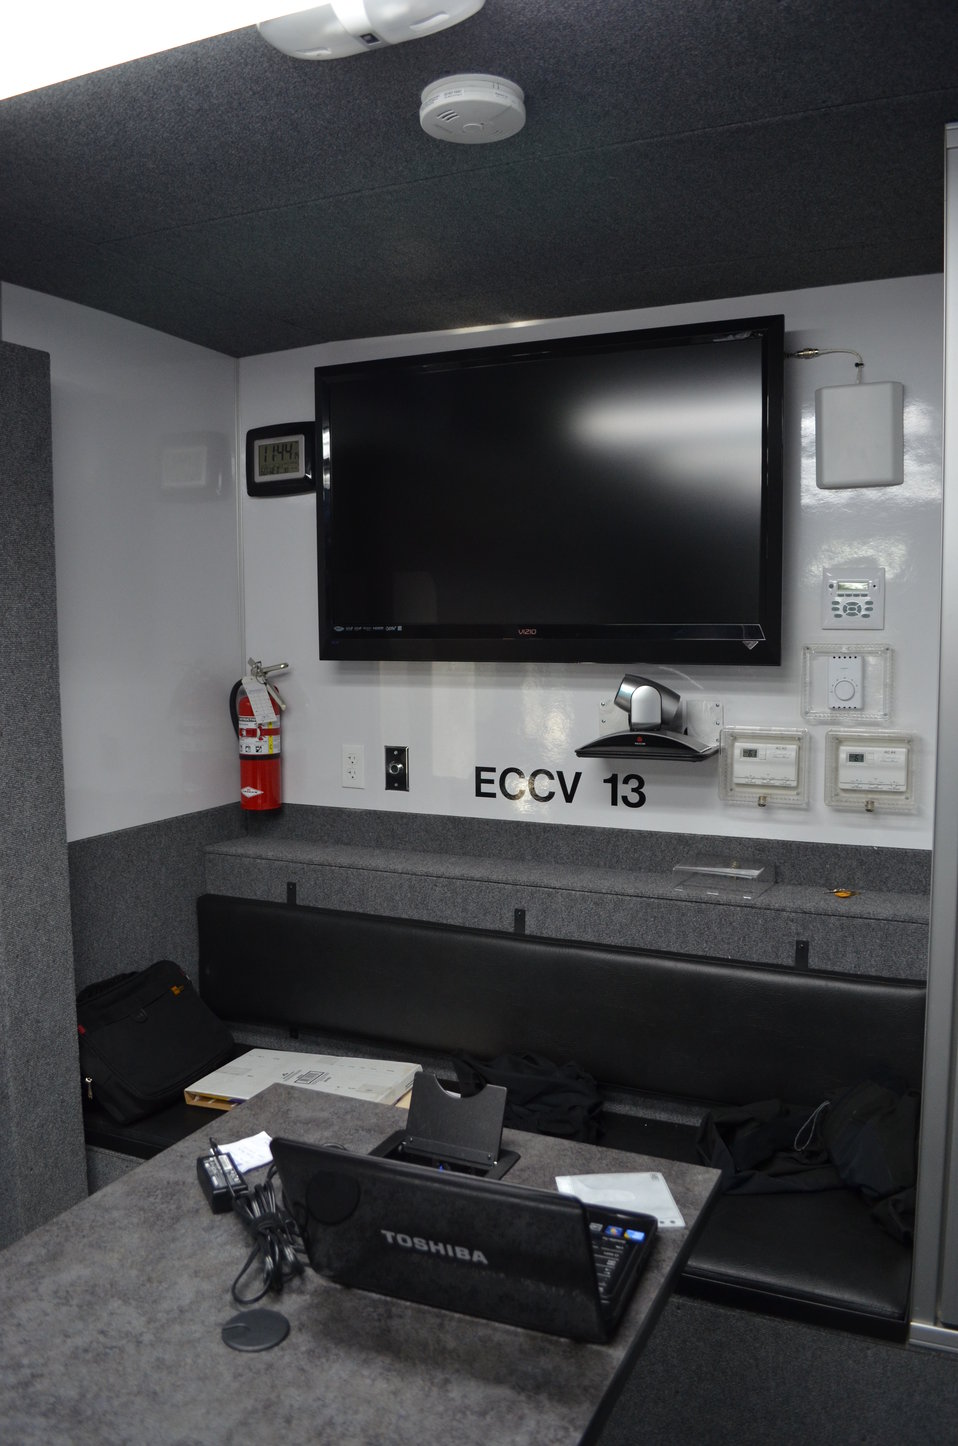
Corps trains on new emergency operations vehicles

An inside view of a new emergency command and control vehicle at a U.S. Army Corps of Engineers Sacramento District facility in West Sacramento, Calif., Nov. 30, 2011. Featuring video teleconference capabilities and 11 workstations, the vehicles are part of the Corps’ deployable tactical operations system, designed to provide mobile command and communications centers that support the quick ramp-up of initial emergency response missions for the Corps.